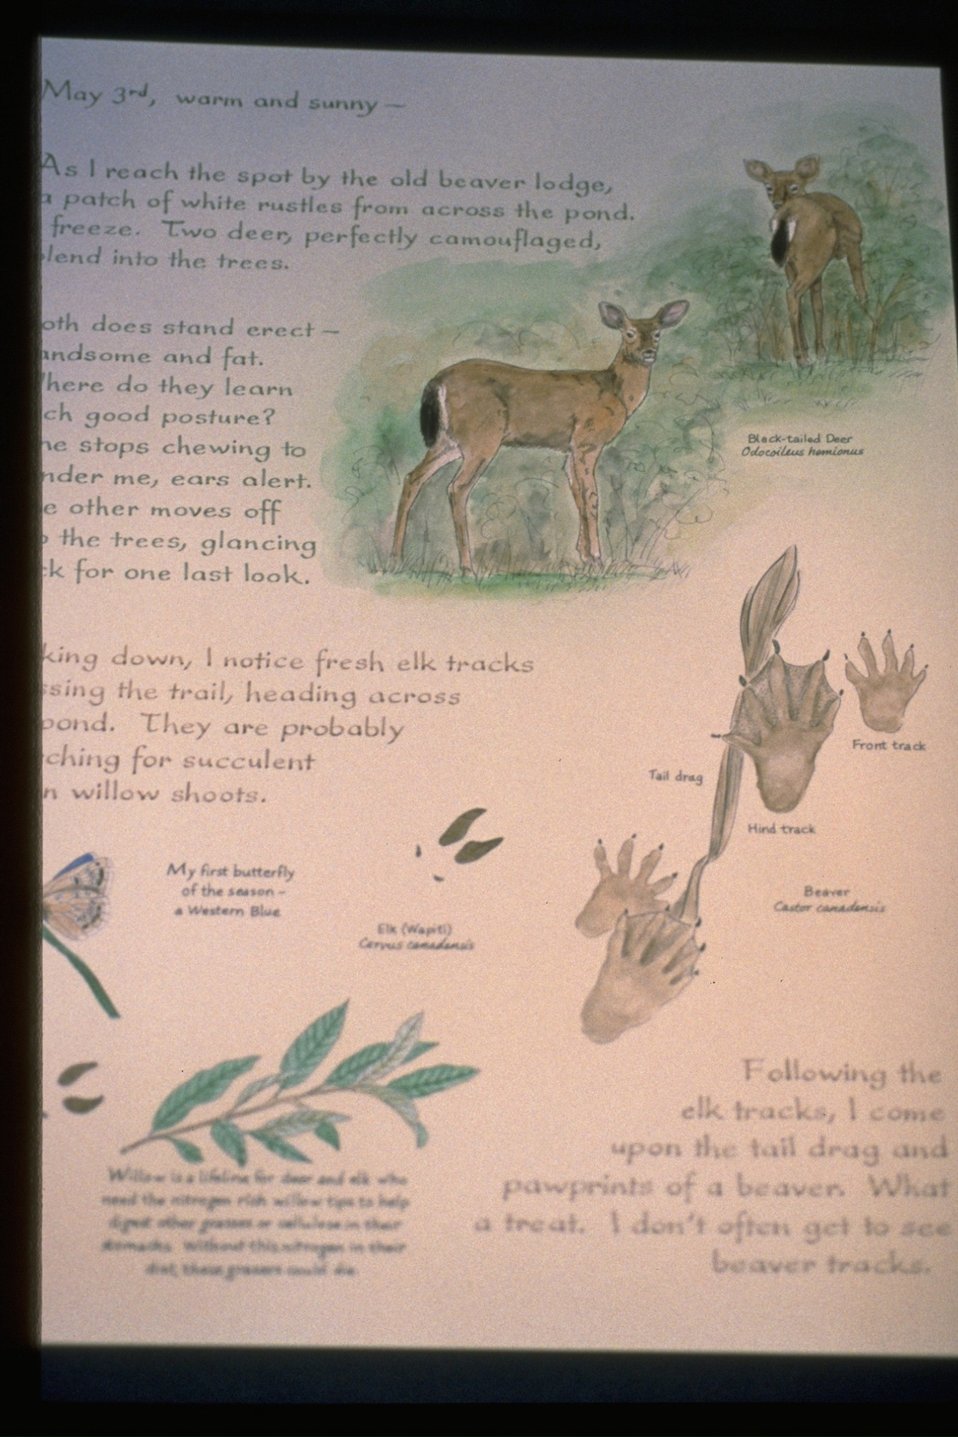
Interpretive Panels: Boardwalk Trail Journals.